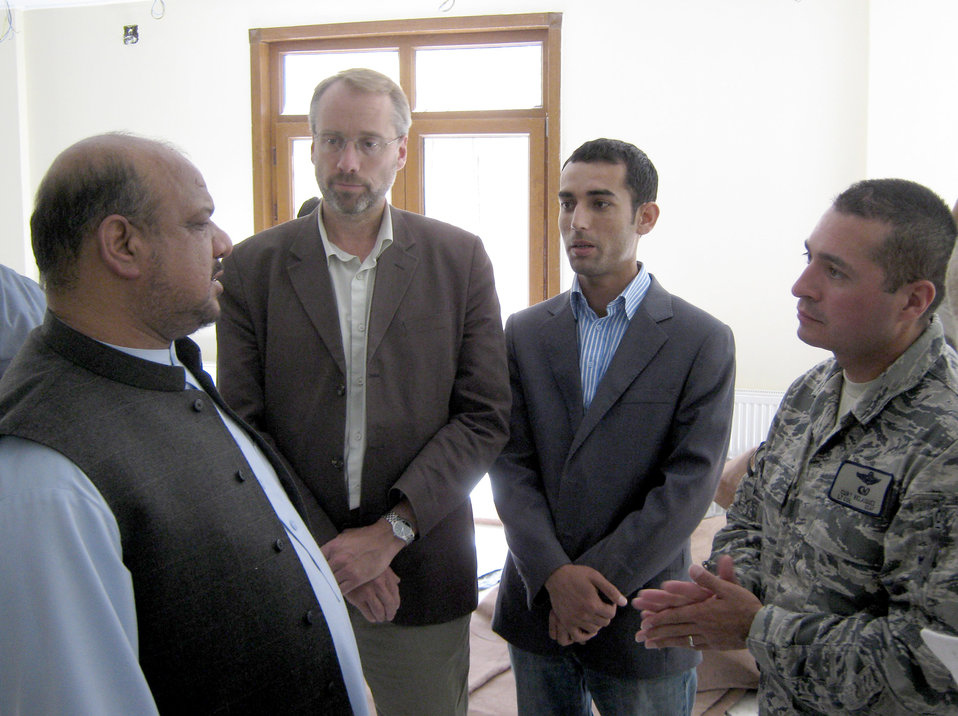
Afghan Vice President Visits Panjshir

(Left to right) First Vice President Mohammad Qasim Fahim, James DeHart, Khalid Siddiqi and Lt. Col. Curtis Velasquez talk during a meeting at Mr. Fahim’s home in the Khenj District May 20, 2010, in the Panjshir Province, Afghanistan. Mr. Fahim is the Afghanistan First Vice President, Mr. DeHart is the U.S. Department of State and Provincial Reconstruction Team Panjshir director, Mr. Siddiqi is the PRT Panjshir political adviser and Colonel Velasquez is the PRT Panjshir commander.